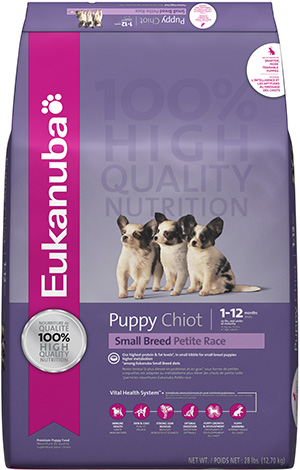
RECALLED – Dog and Cat foods - Dry

August 14, 2013 – Product Recall – P&G Voluntarily Recalls Limited Quantity of Dry Pet Food Due to Possible Health Risk.